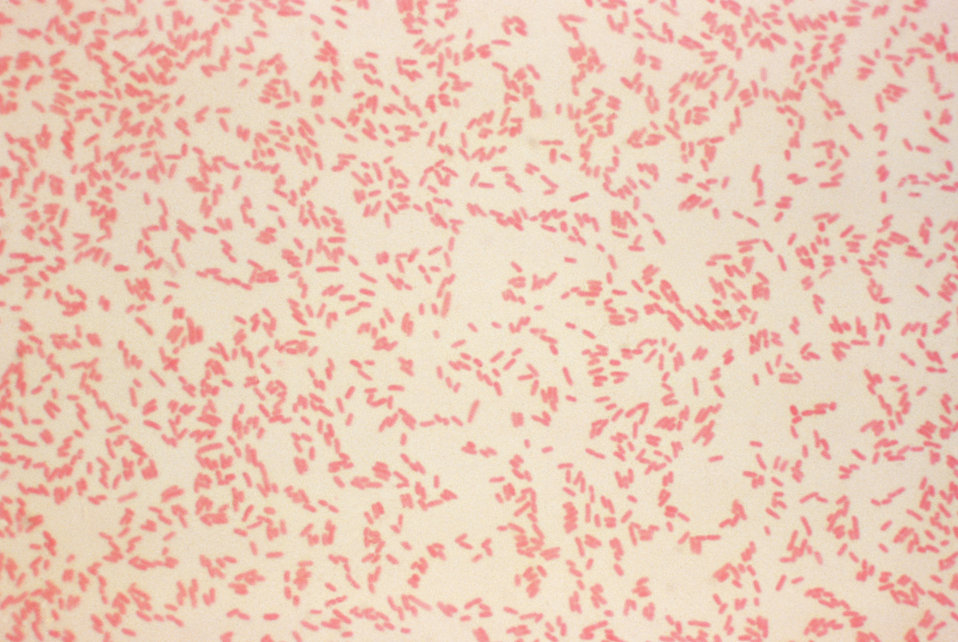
A photomicrograph of Yersinia enterocolitica using gram stain technique.